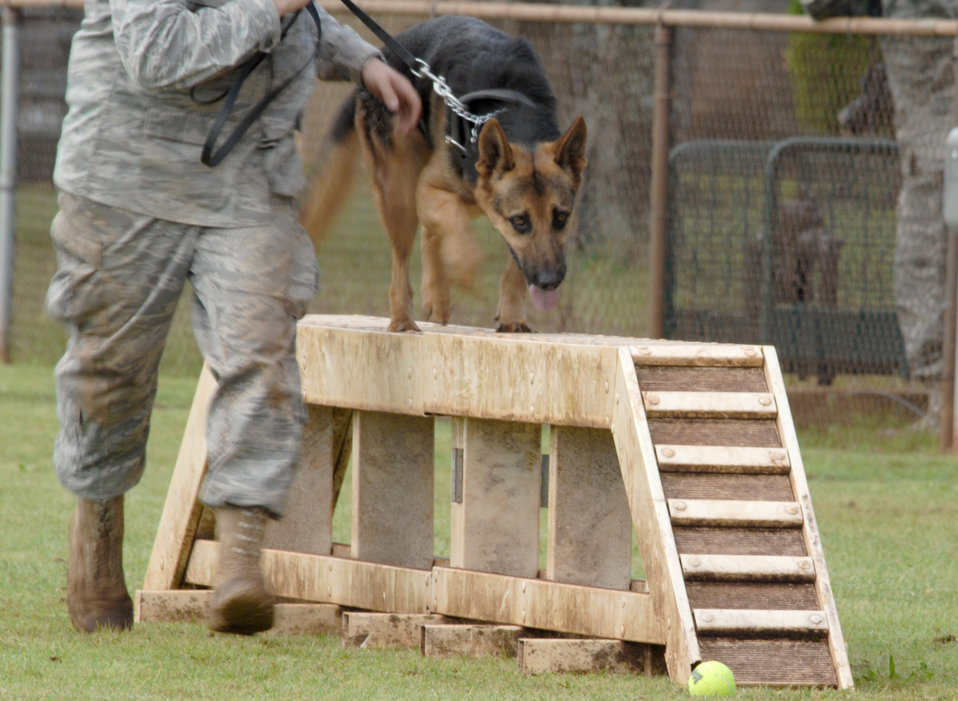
MWD competition

Staff Sgt. Nicholas Vollweiler and his two-year-old dog, Laci, the youngest dog at the 2010 Hawaiian Islands Working Dog Competition, navigate an obedience course Nov. 19, 2010, at Schofield Barracks, Hawaii.